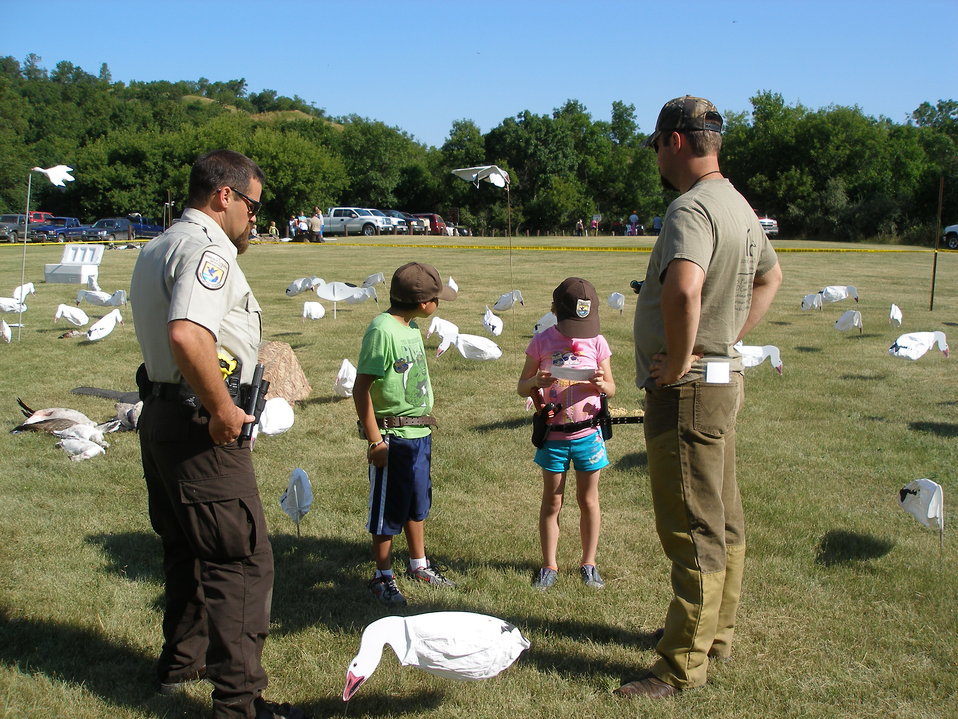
2011 Greenwing Day - Game Warden scenario session

Des Lacs National Wildlife Refuge, Tasker's Coulee

Participants were able to play Federal and State Game Wardens as they visited hunters in the field to check licenses and see if they were following hunting rules and regulations properly.